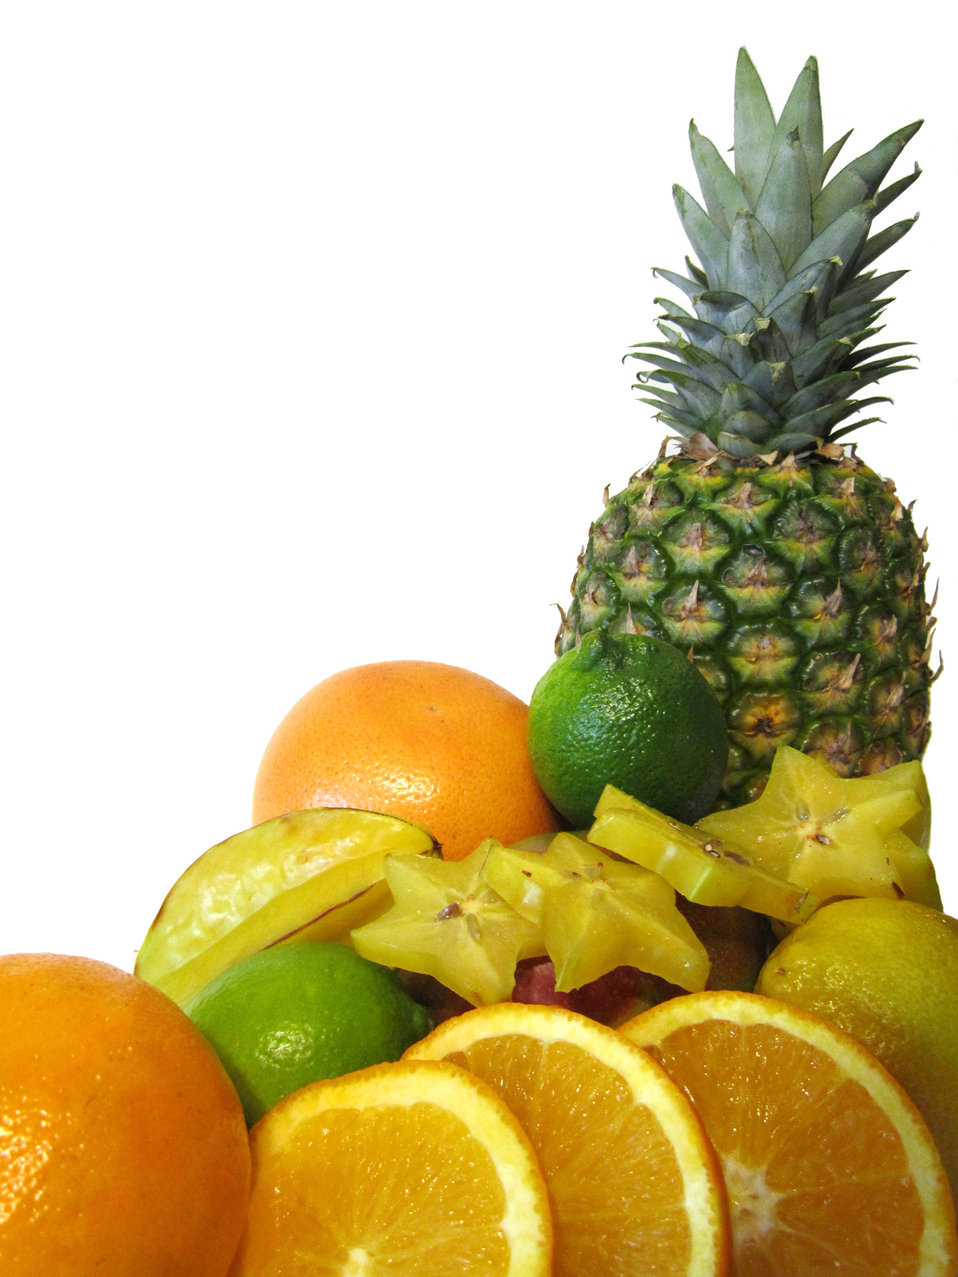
Tropical fruits

A group of tropical fruits.